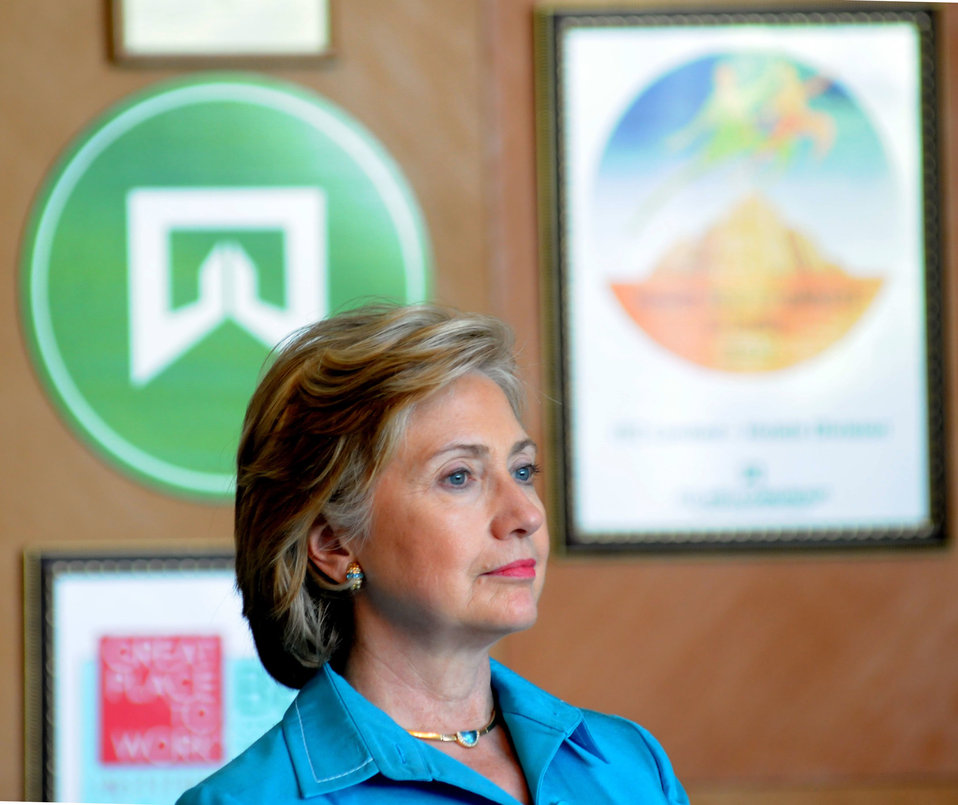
Secretary Clinton Visits ITC Green Center

U.S. Secretary of State Hillary Rodham Clinton at the ITC Green Centre in Gurgaon, outside of New Delhi, India July 19, 2009. The ITC Green Centre is the world's largest 'Platinum Rated' green office building.